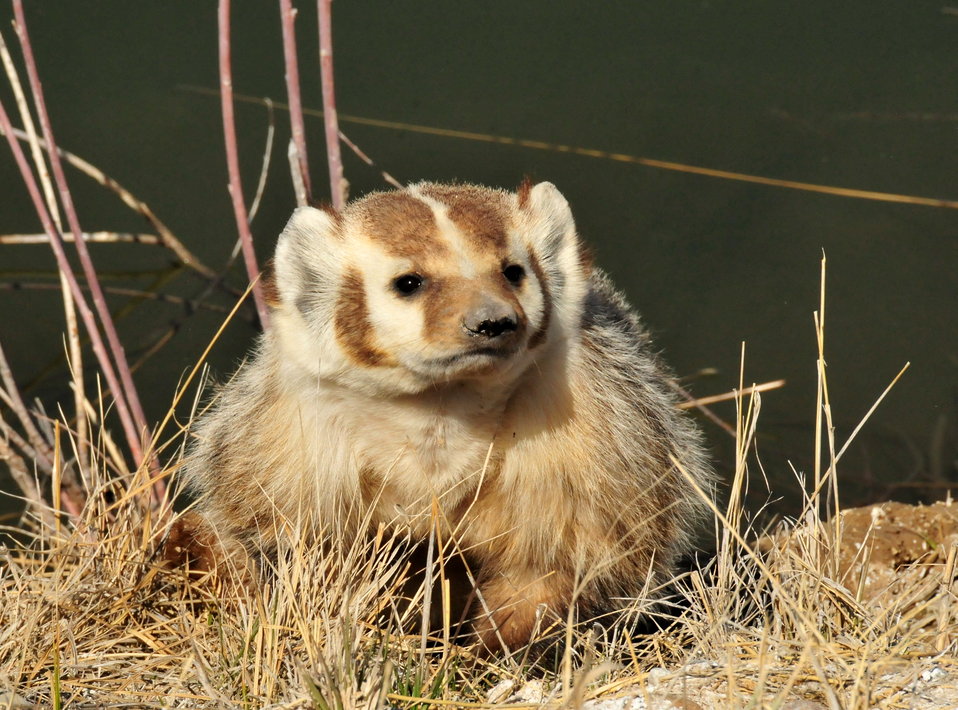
Badger on Seedskadee National Wildlife Refuge 02

A badger observed on Seedskadee NWR Photo: Tom Koerner/USFWS